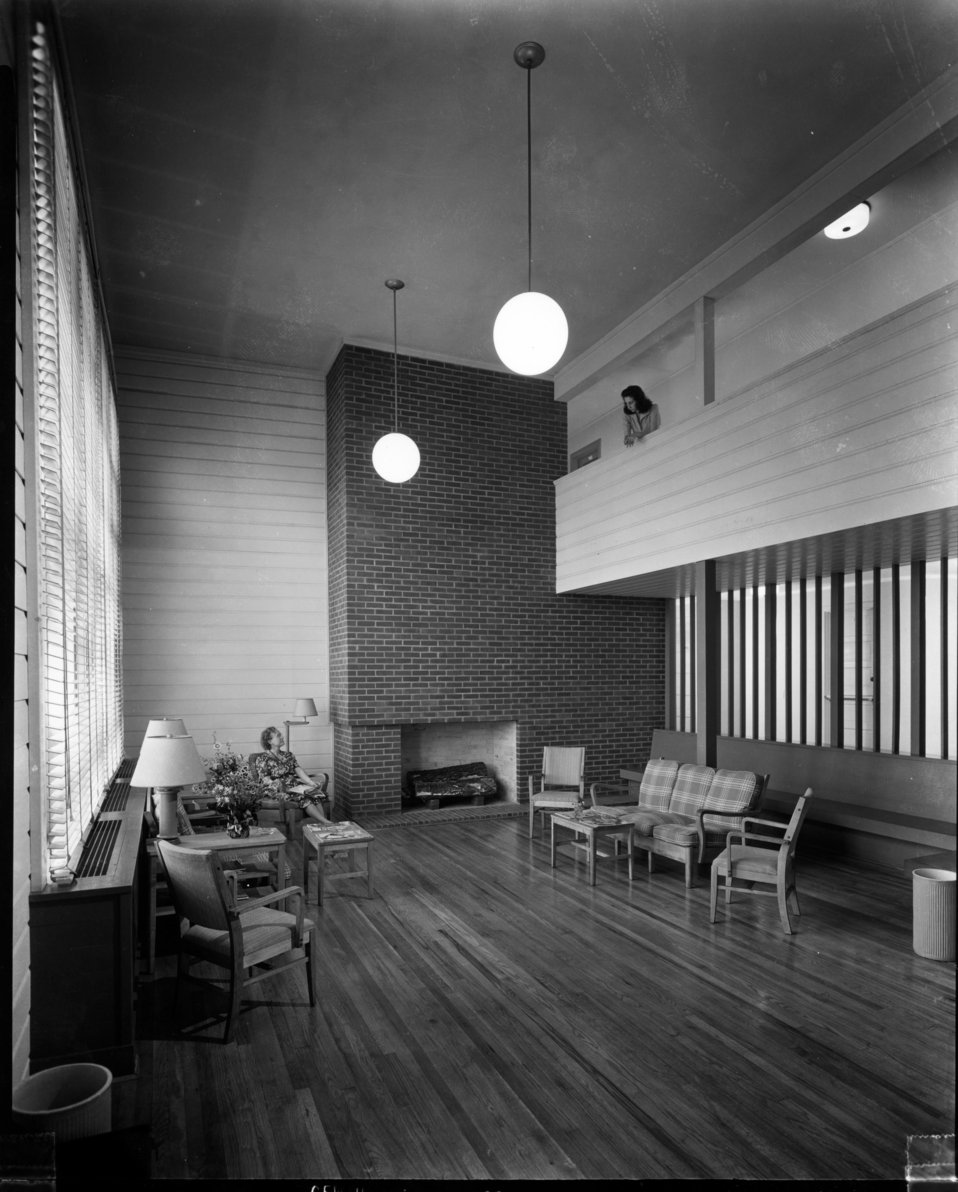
Housing at Oak Ridge